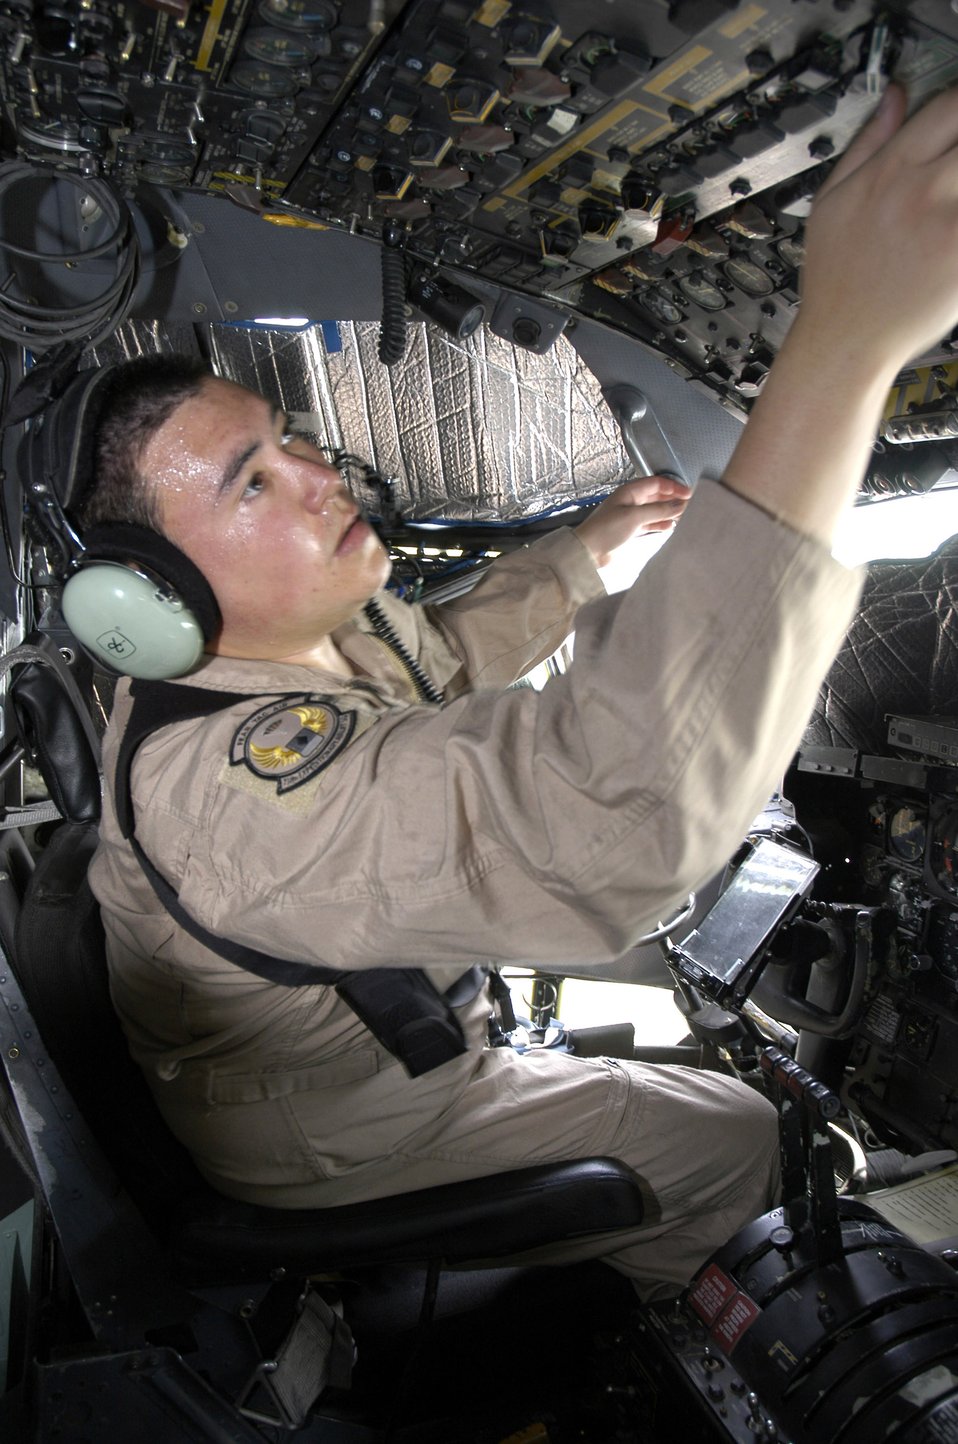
Airlift support

Staff Sgt. Patrick Bowling performs pre-flight checks at a forward operating base in Southwest Asia Aug. 23. Sergeant Bowling is with the 738th Expeditionary Airlift Squadron. The wing is the primary aerial hub for Operation Iraqi Freedom and provides airlift support for Operation Enduring Freedom and the Horn of Africa.